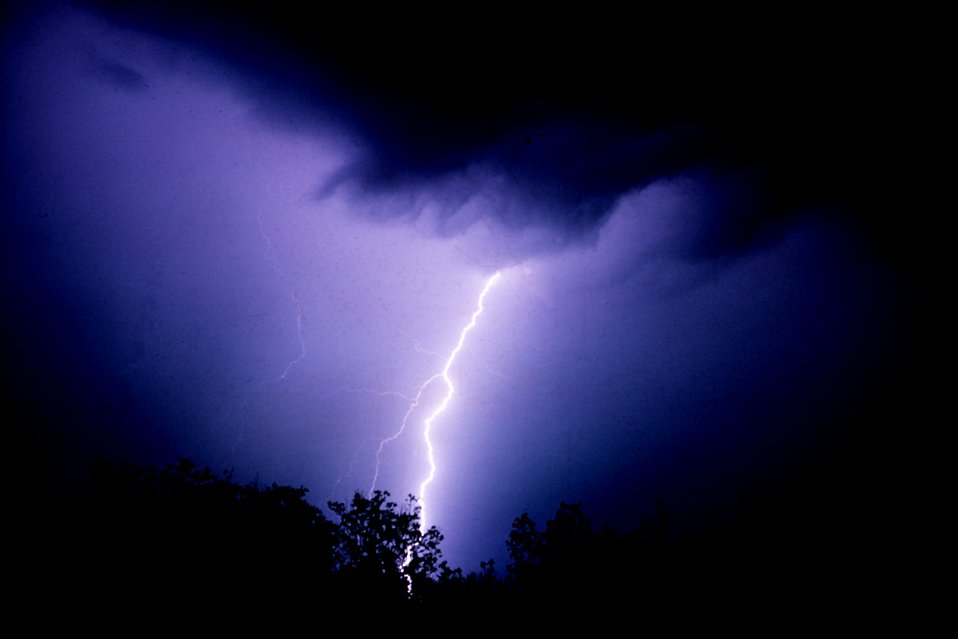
Lightning bolt during storm.